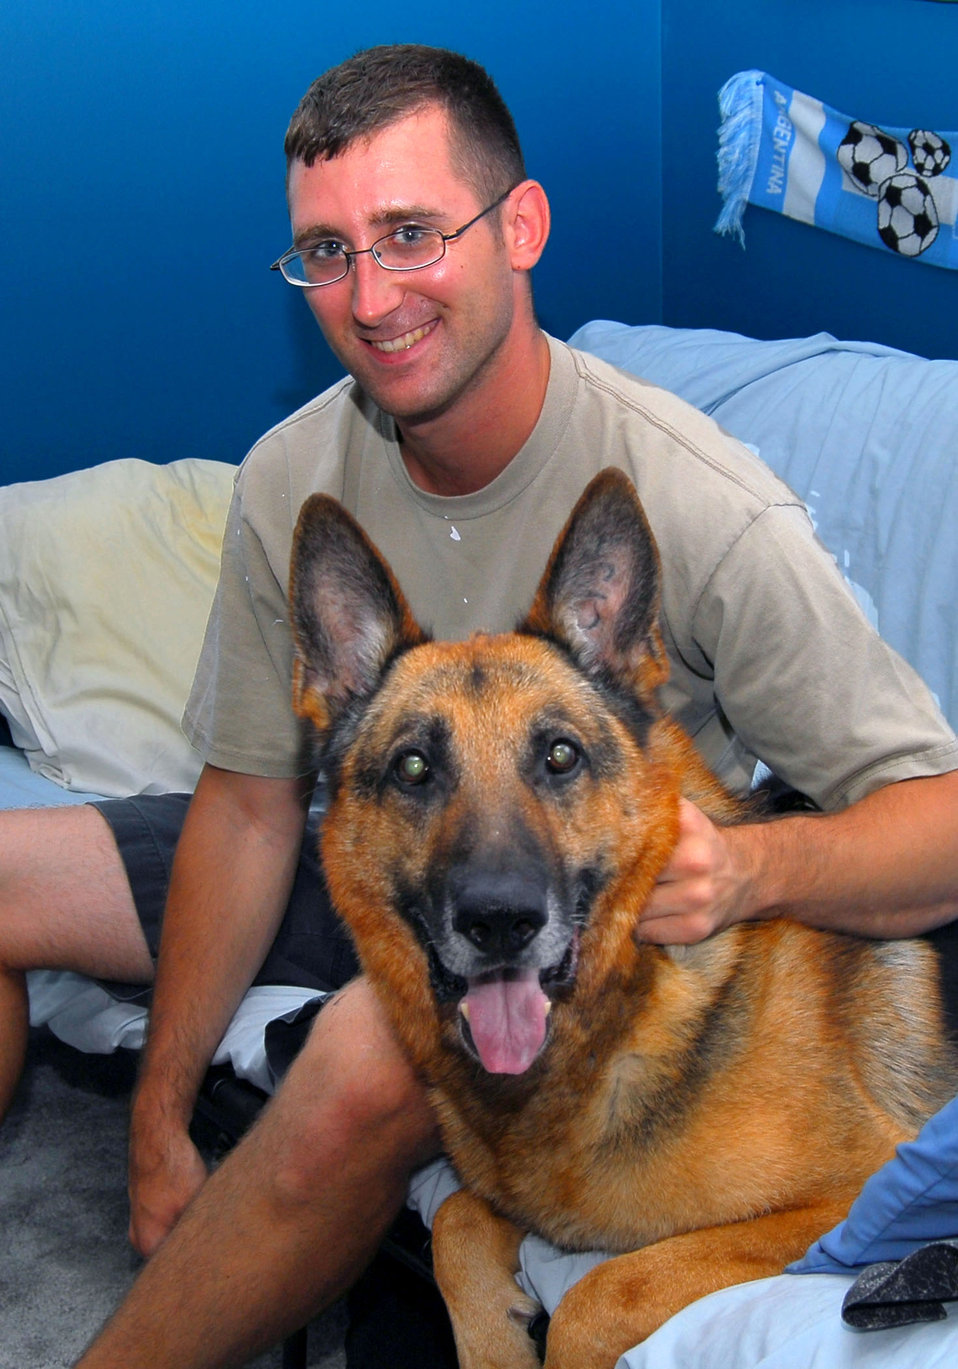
Retired working dog finds permanent home with former handler

Staff Sgt. Morgan Maul and Ajax, a recently retired military working dog that Sergeant Maul has adopted. Sergeant Maul is a 23rd Security Forces Squadron military working dog handler at Moody Air Force Base, Ga.